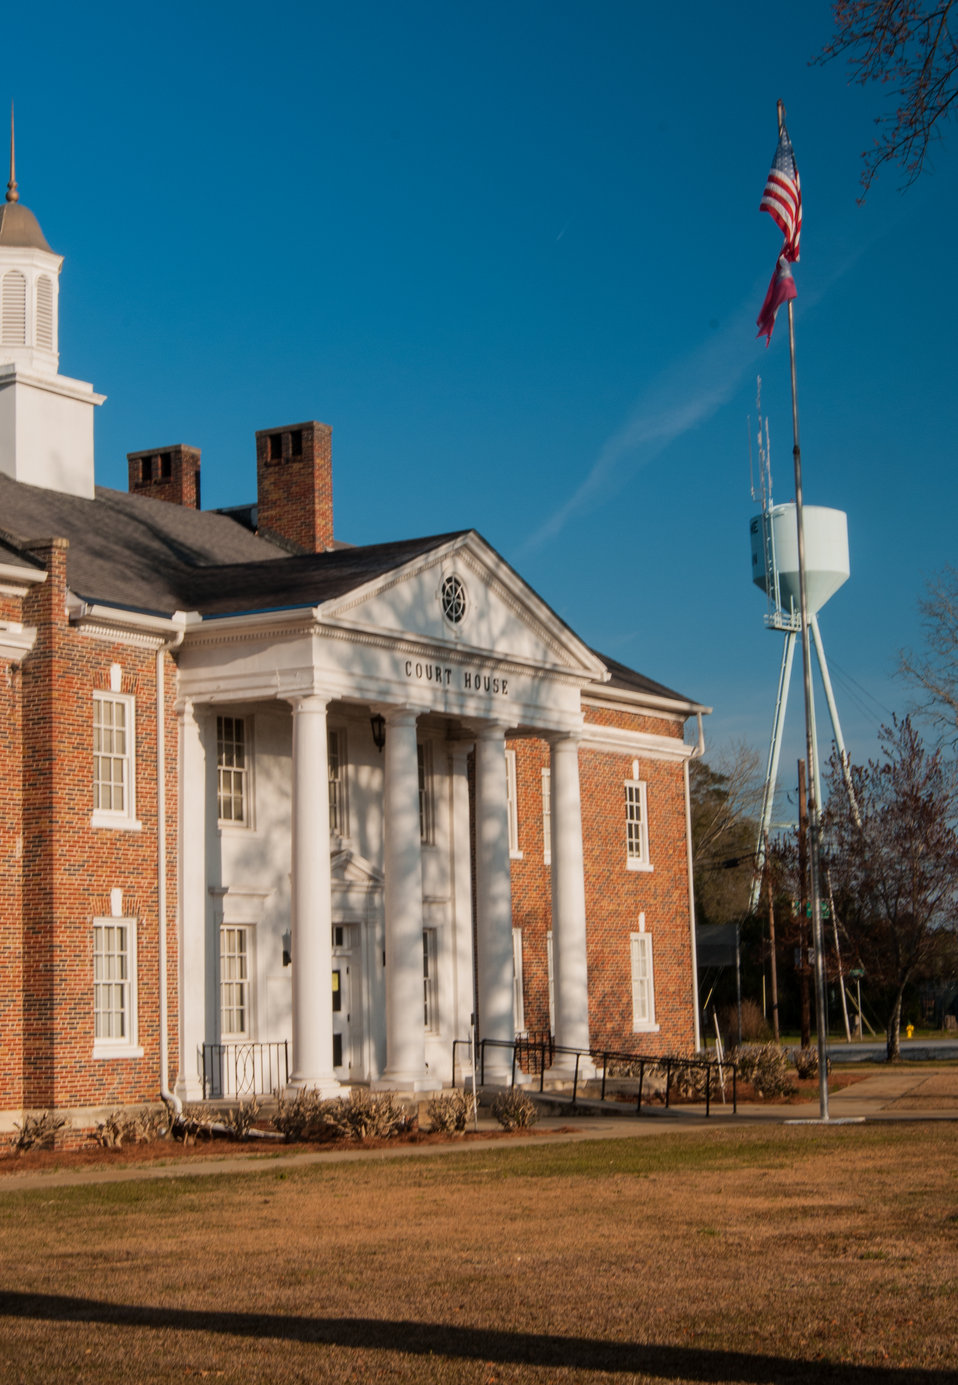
The Court House in Morgan, GA on Mar. 7, 2013. The U.S. Department of Agriculture (USDA) offers many economic grants, loans and conservation contracts through Rural Development (RD) and the Natural Resources of Conservation Service (NRCS) for areas of rural America with a high percentage of people living below the poverty level and considered economically distressed.